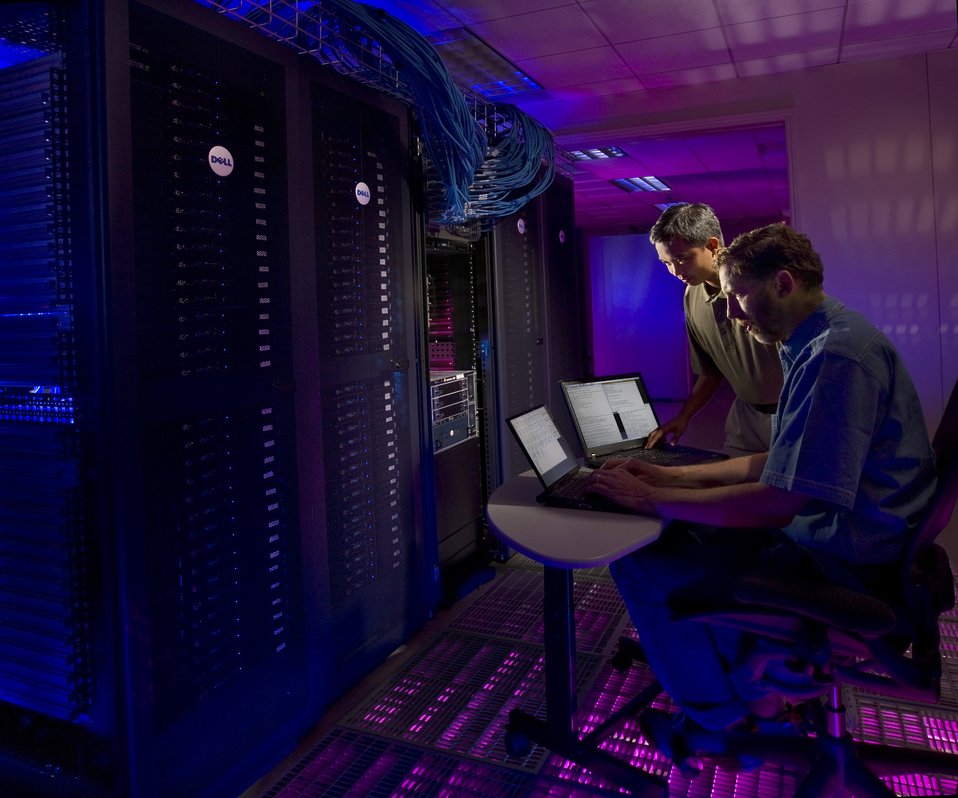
Thunderbird supercomputer at Sandia National Laboratory.

Sandia computer scientists Ron Minnich (foreground) and Don Rudish have successfully run more than a million Linux kernels as virtual machines, an achievement that will allow cyber security researchers to more effectively observe behavior found in malicious botnets. They utilized Sandia's Thunderbird supercomputing cluster for the demonstration.